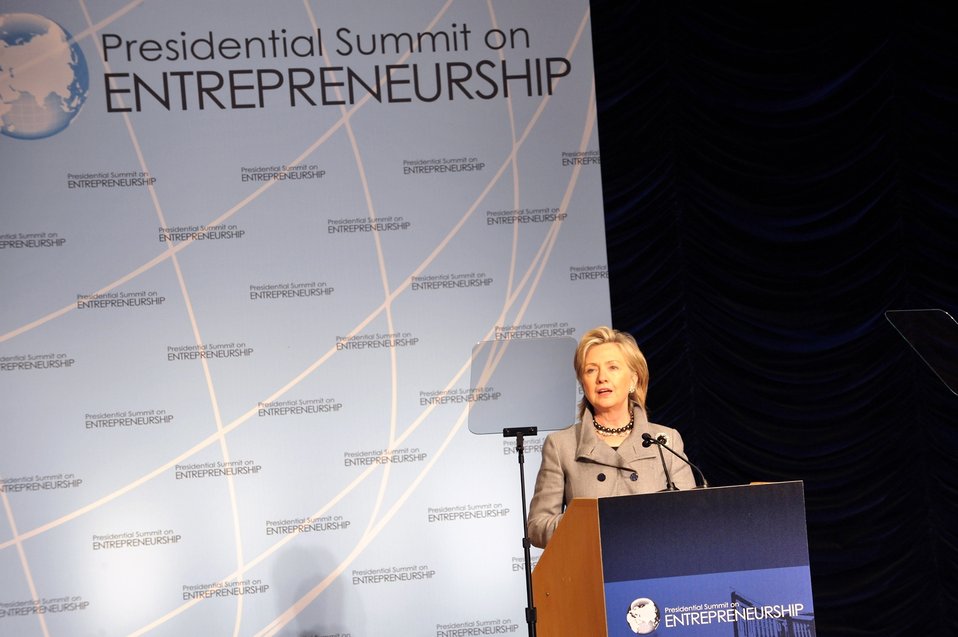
Secretary Clinton Addresses Presidential Summit on Entrepreneurship

U.S. Secretary of State Hillary Rodham Clinton delivers remarks at the 2010 Presidential Summit on Entrepreneurship, Washington, D.C., April 27, 2010.